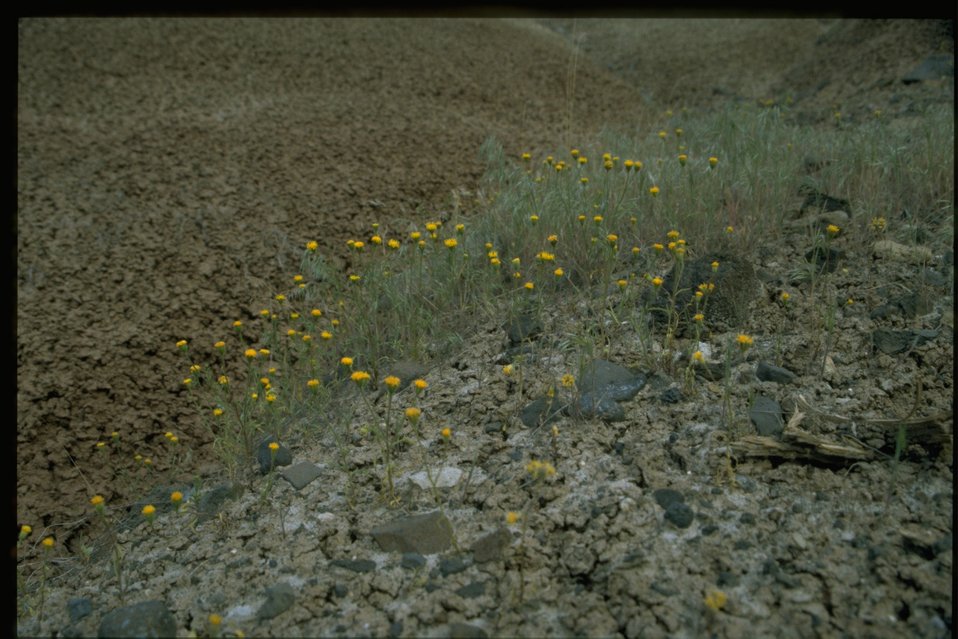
Farshot of John Day's pincushion (Chaenactis nevii).